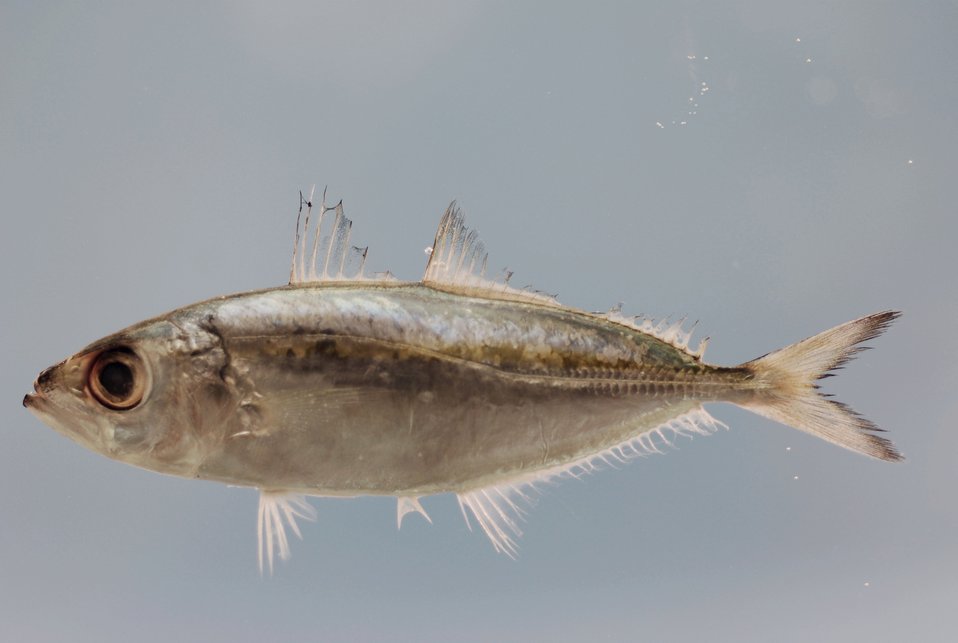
Fleshy tabs of the bigeye scad ( Selar crumenophthalmus )